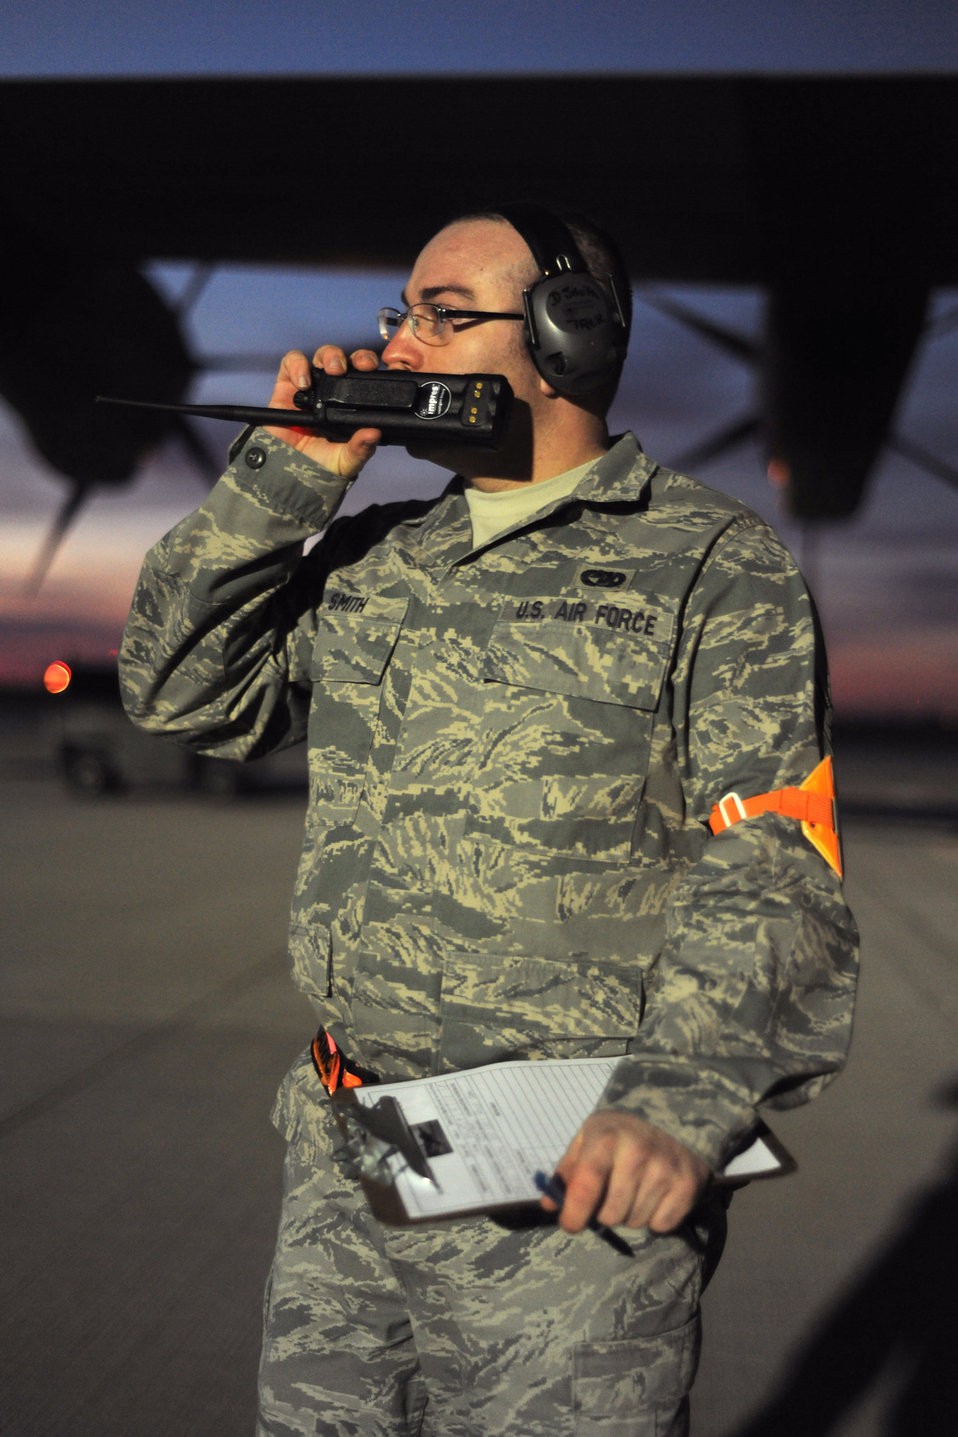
Operation Odyssey Dawn

SPANGDAHLEM AIR BASE, Germany ? An Airman assigned to the 726th Air Mobility Squadron relays information about an outgoing C-130J Super Hercules here in support of Operation Odyssey Dawn March 21. Joint Task Force Odyssey Dawn is the U.S. Africa Command task force established to provide operational and tactical command and control of U.S. military forces supporting the international response to the unrest in Libya and enforcement of United Nations Security Council Resolution (UNSCR) 1973. UNSCR 1973 authorizes all necessary measures to protect civilians in Libya under threat of attack by Qadhafi regime forces. JTF Odyssey Dawn is commanded by U.S. Navy Admiral Samuel J. Locklear, III.